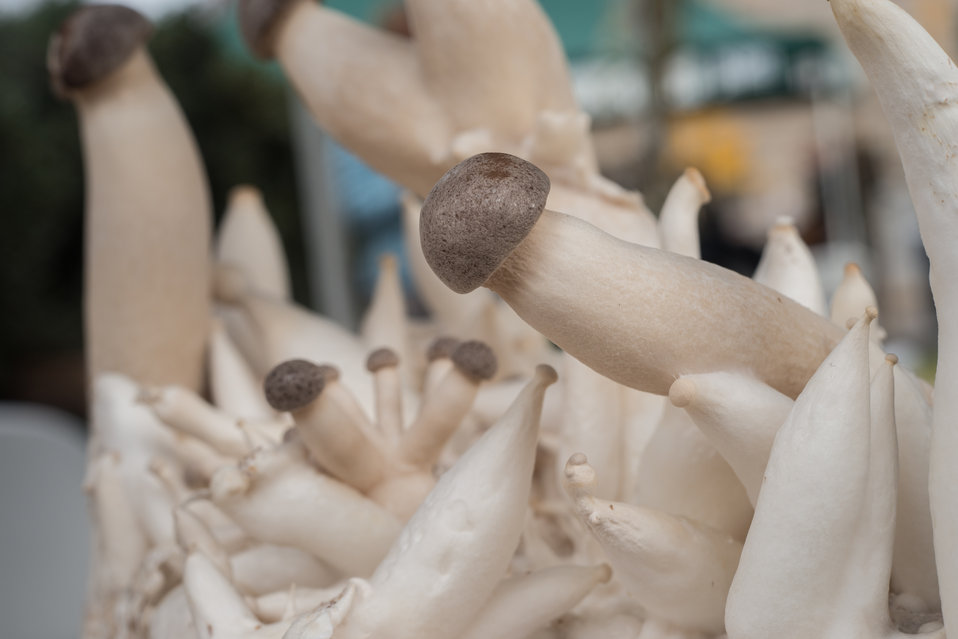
Young royal trumpet mushrooms growing on a sawdust growing medium on display at the U.S. Department of Agriculture (USDA) farmers markets and Harvest Festival at the USDA Whitten Building east parking lot in Washington, DC, on Friday, November 22, 2013.